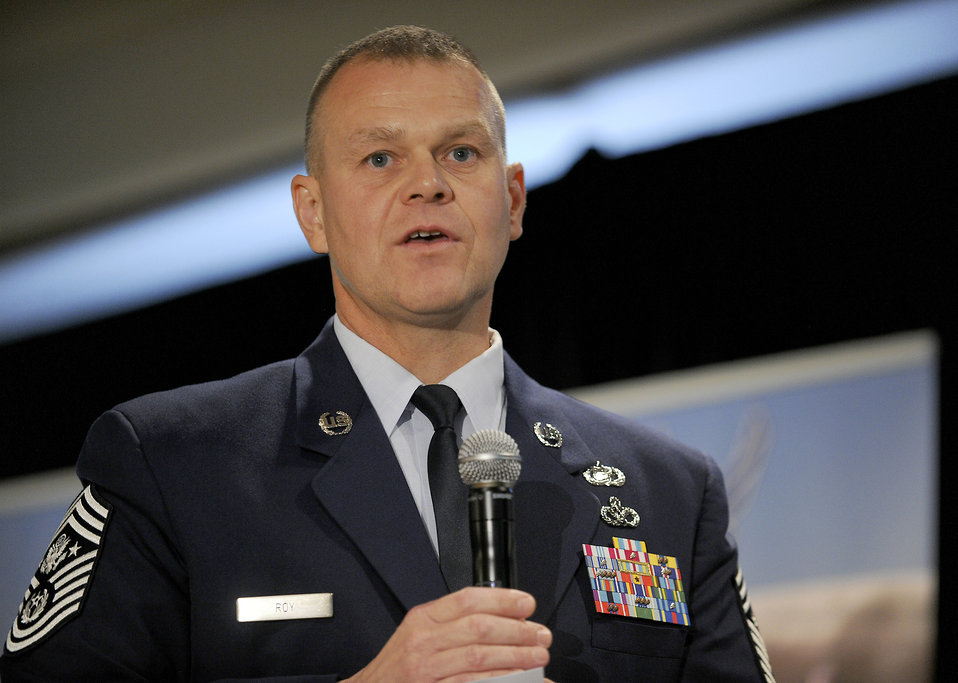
Air Force Caring for People forum begins

During the Caring for People forum July 19, 2011, Chief Master Sgt. of the Air Force James A. Roy challenged attendees to help Airmen by finding out what works, what doesn’t and how they can best formulate a system that works to help Airmen.